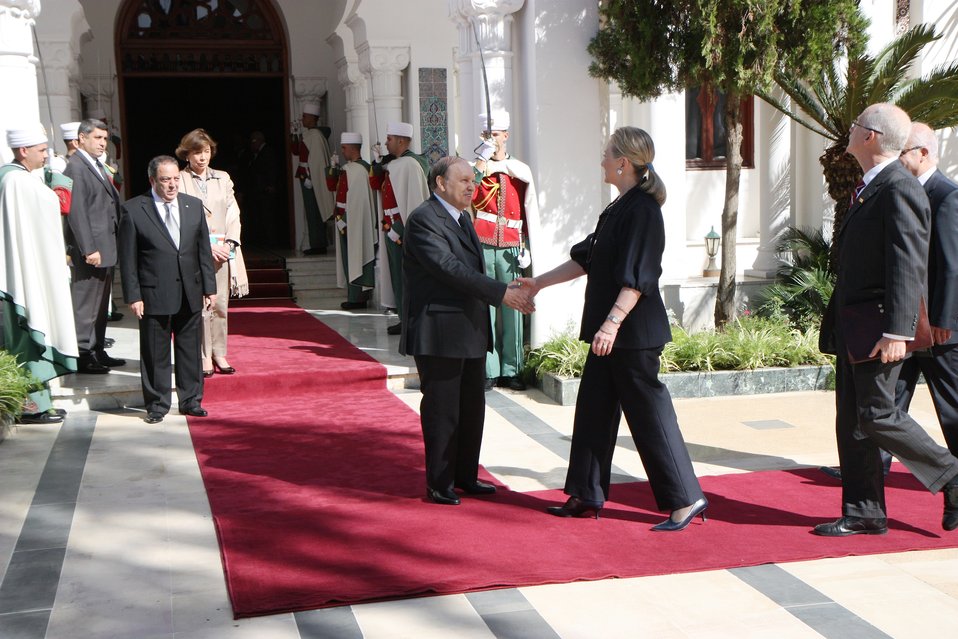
Secretary Clinton Shakes Hands With Bouteflika

U.S. Secretary of State Hillary Rodham Clinton shakes hands with Algerian President Abdelaziz Bouteflika in Algiers, Algeria, October 29, 2012.